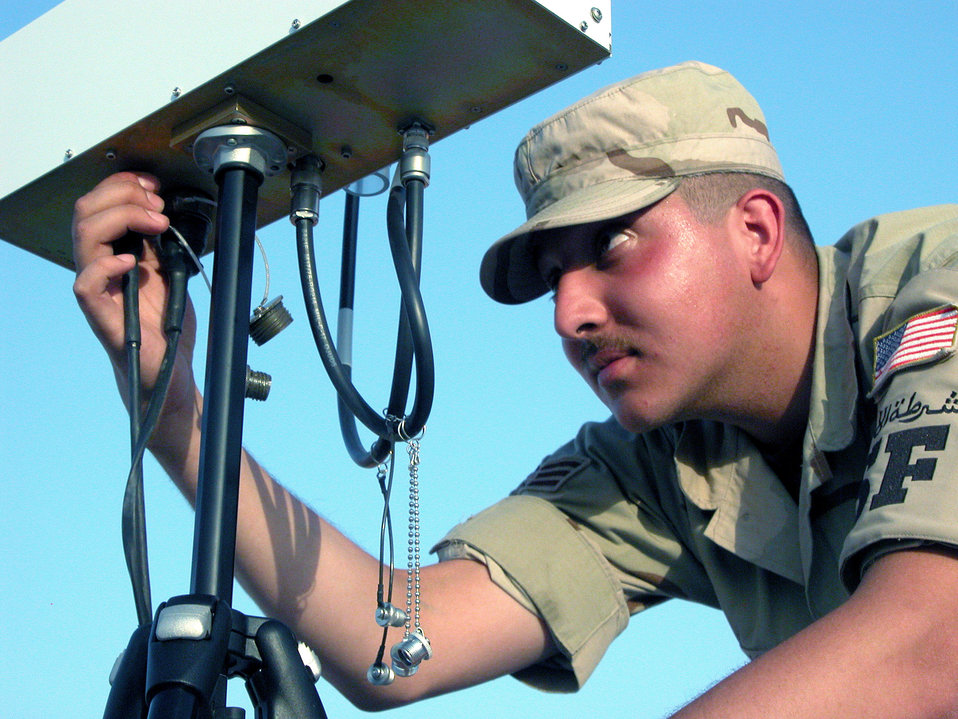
Desert Hawk gives security forces an eye in sky

SOUTHWEST ASIA -- Senior Airman Alexander Jimenez makes adjustments to the antenna that controls the Desert Hawk unmanned aerial vehicle. He is assigned to the 379th Security Forces Squadron's airborne surveillance program and is deployed from Spangdahlem Air Base, Germany.